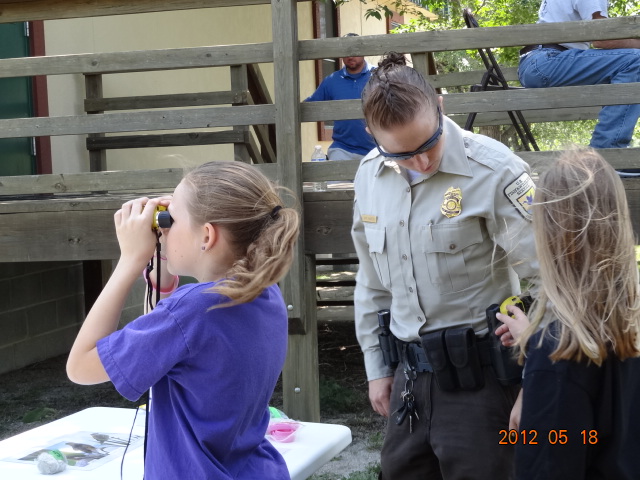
International Migratory Bird Day 2012

Marais des Cygnes National Wildlife Refuge